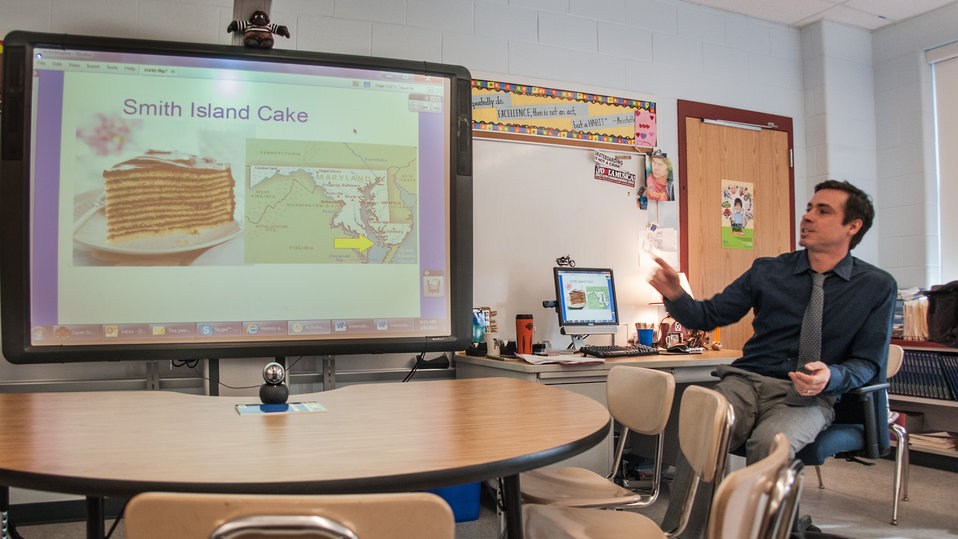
Harmony Hills Elementary School 5th grade teacher Mr. Damien Grasso shows a photo of Smith Island Cake and a map of where is Smith Island in Maryland, during the inaugural International School Meals Day at Harmony Hills Elementary School in Silver Spring, MD, on Friday, March 8, 2013. Mr. Grasso's 5th grade class was paired with Mrs. Karen McAllister’s class at Dalry Primary School in North Ayershire, Scotland, United Kingdom. The Harmony Hills students sit at this table to interact, using a real-time online video connection, with the Scottish students. The Dalry students honored the Maryland students, by having prepared a Southern Maryland dessert, Smith Island cake (made with 7 thin cake layers). USDA's Food and Nutrition Service oversees the administration of 15 nutrition assistance programs that work in concert to form a national safety net against hunger. Learn more by visiting www.fns.usda.gov and twitter @USDANutrition.